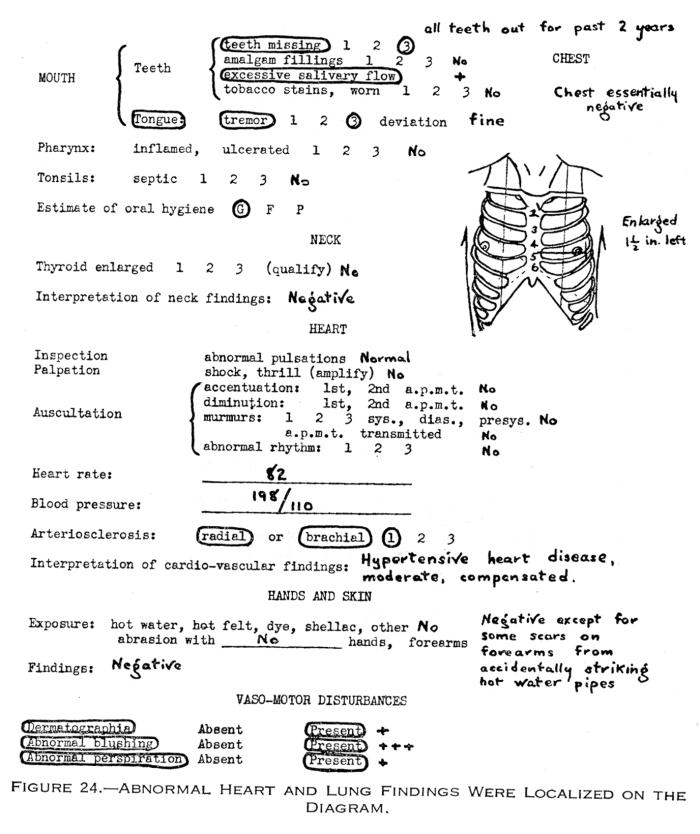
This historical image was provided by the Center for Disease Control's (CDC), National Institute for Occupational Safety and Health (NIOSH). Depicted, was a page from a written medical questionnaire, recorded during a history and physical examination of a fur cutter, who'd been exposed to mercury in a hat manufacturing plant. Fur processing involves the use of mercury in the form of mercury nitrate, which renders the fur suitable for manufacturing hats. If precautions were not taken, such as wearing a filtered breathing mask, or gloves, mercury exposure was quite likely, and would have lead to heavy metal poisoning, with severe pathologic neurological consequences. The image was published in the 'Public Health Bulletin', No. 263, Fig. 24, 1941.